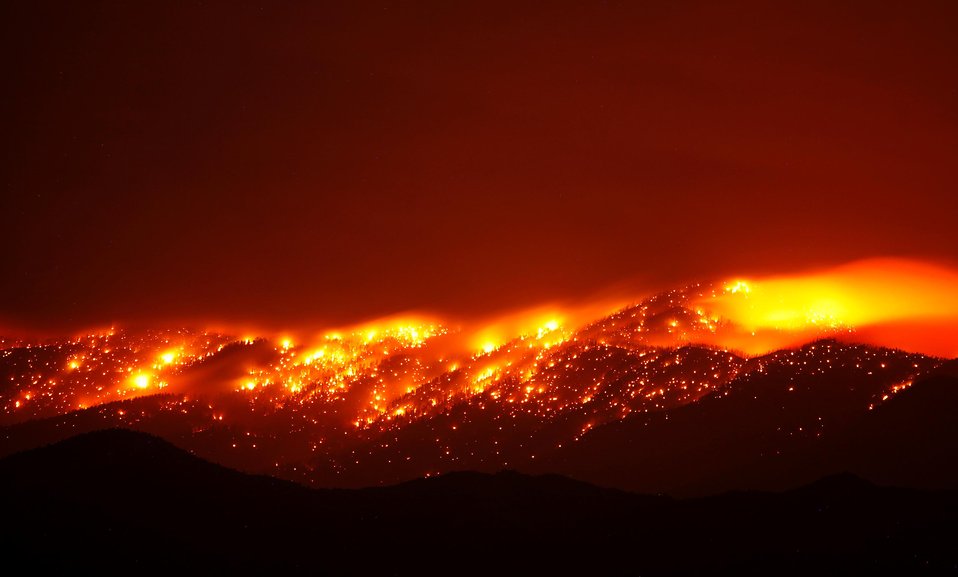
The La Madre fire is part of the Carpenter Fire in the Toiyabe National Forest near Humboldt, NV was caused by a lightning strike on Jul. 1, 2013. The fire has consumed nearly 27,881acres and is presently 70% contained.